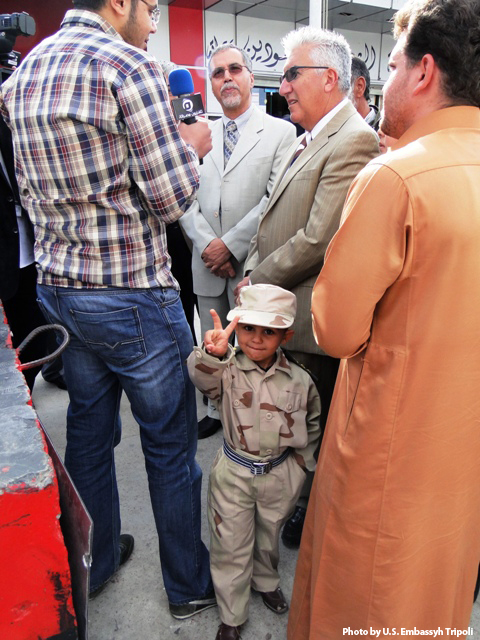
Miurata Television Reporters Ask Ambassador Cretz About His Visit

Misurata Television reporters ask U.S. Ambassador to Libya Gene Cretz about the purpose of his visit to Misurata, as a young man expresses his own appreciation for the Ambassador’s visit in Misurata, Libya, on November 26, 2011.